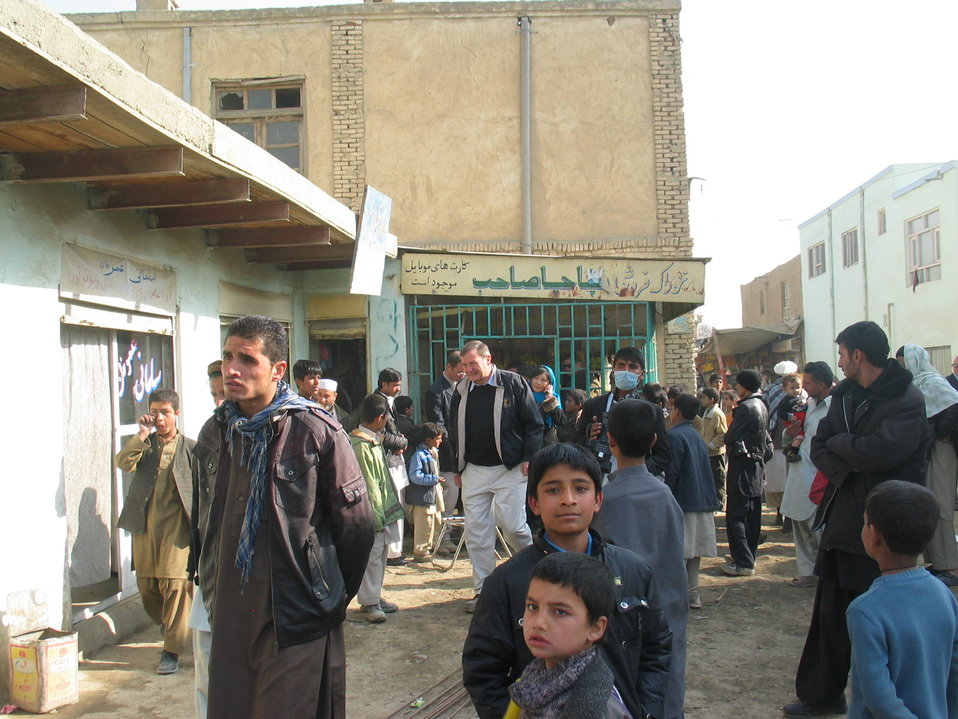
Kabul River Bridge Renovation, December 3, 2010